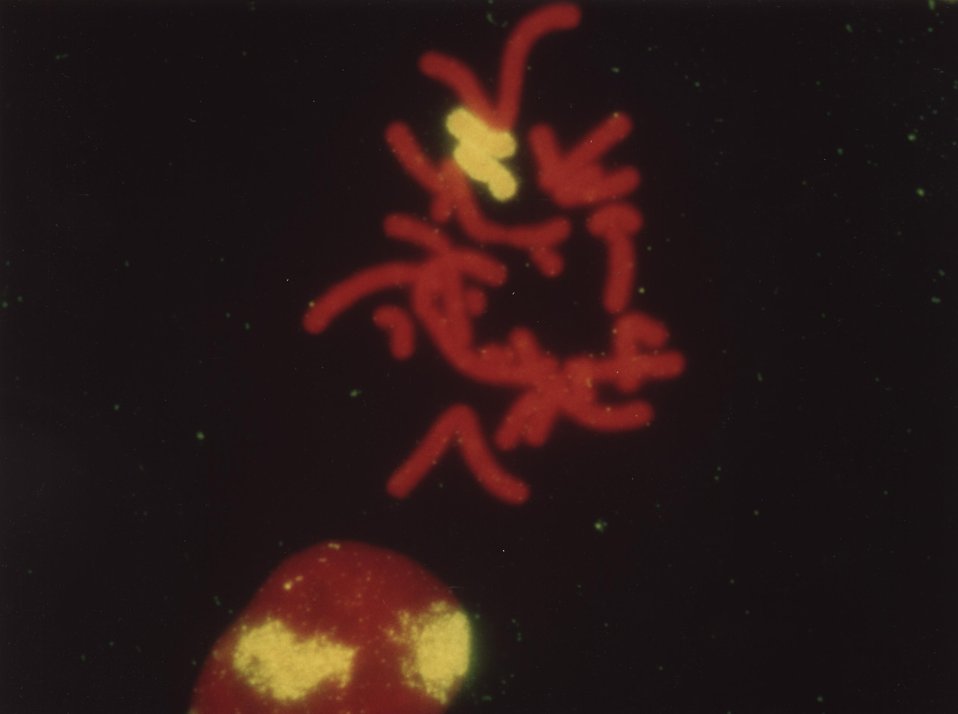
Detecting Radiation-Induced Chromosome Translocations. Scientists at the Lawrence Livermore National Laboratory are developing a chromosome stain that is made up of fluorescent biotin-labeled DNA fragments.Shown here to demonstrate this elegant technique is a metaphase spread of hamster chromosomes (orange) with two human chromosomes (yellow).